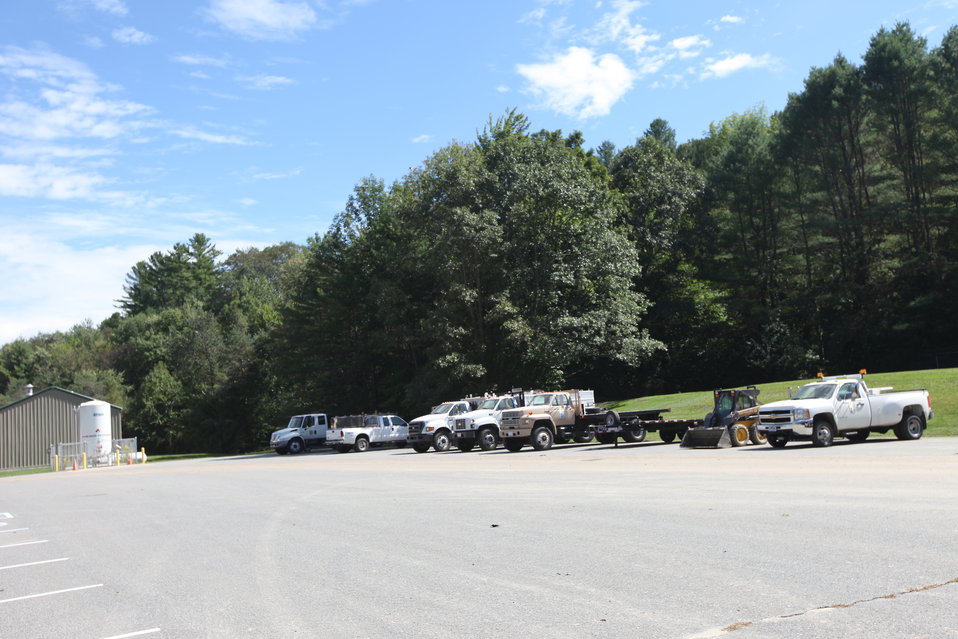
Storm damage relief at White River NFH

Heavy equipment operators came from other USFWS stations to help clean up.